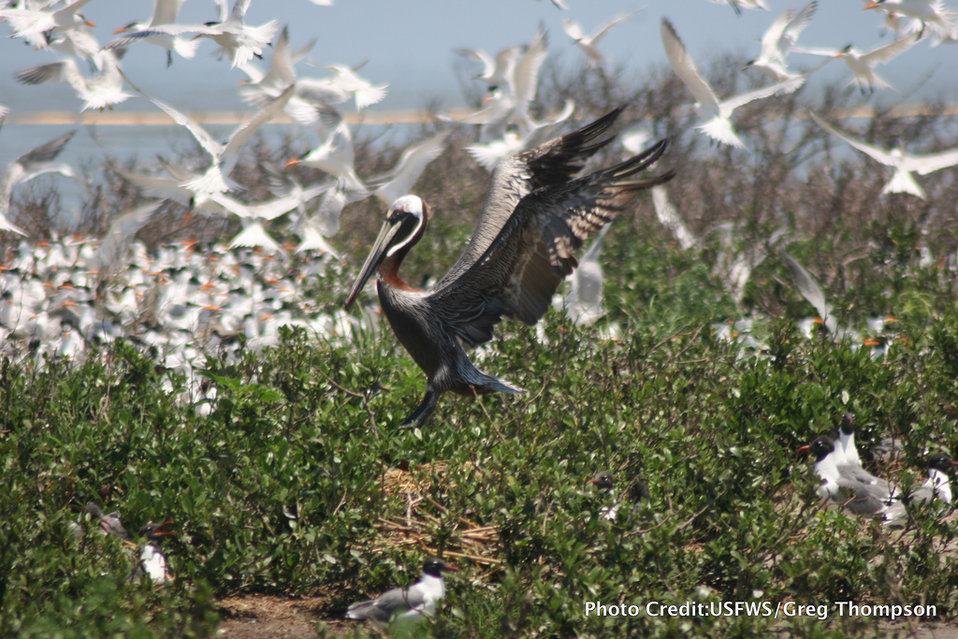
Breton National Wildlife Refuge, LA

A brown pelican among royal terns